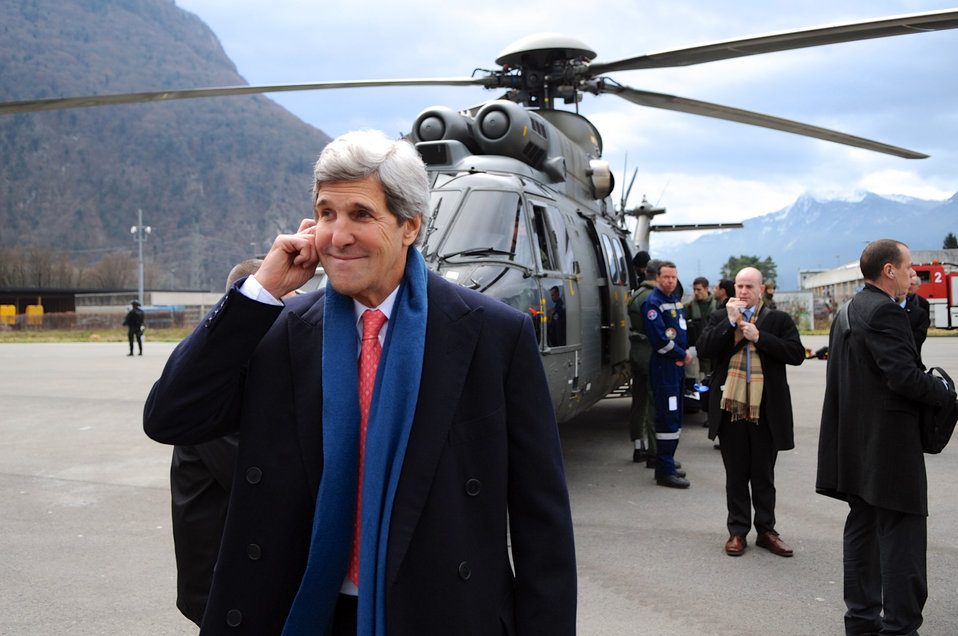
Secretary Kerry Pauses Before Helicopter Flight Across Switzerland

U.S. Secretary of State John Kerry pauses before boarding a Swiss Air Force helicopter for a flight between Montreux and Davos, Switzerland, on January 23, 2014.